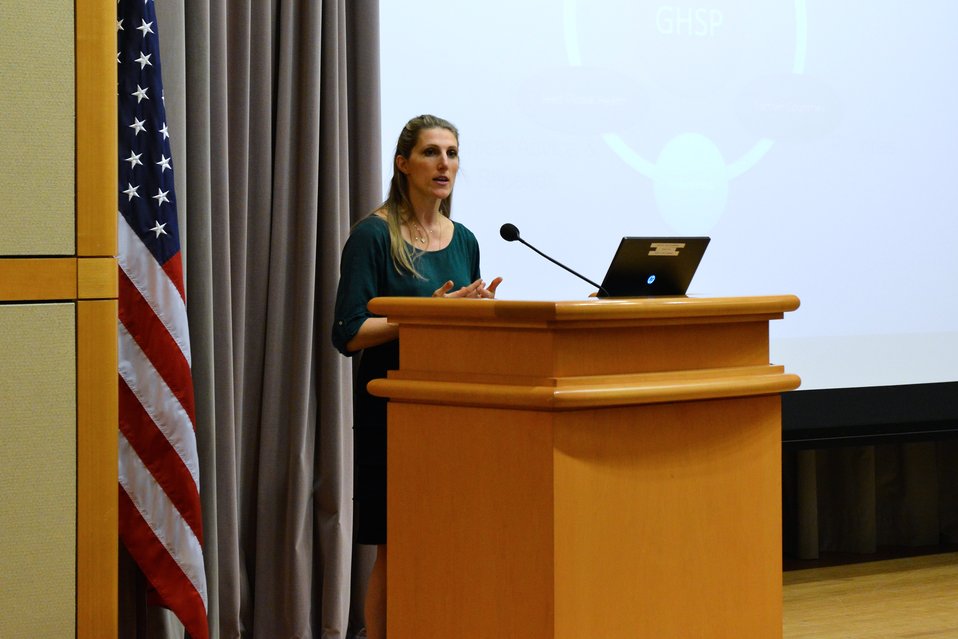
Dr. Vanessa Kerry Delivers Remarks on Health Diplomacy

Dr. Vanessa Kerry, Co-Founder and Chief Executive Officer of Seed Global Health, speaks on 'Improving Developing Country Health Systems through the Spirit of Volunteerism,' part of the Secretary’s Office of Global Health Diplomacy (S/GHD) Speaker Series, at the U.S. Department of State in Washington, D.C., on April 22, 2014.